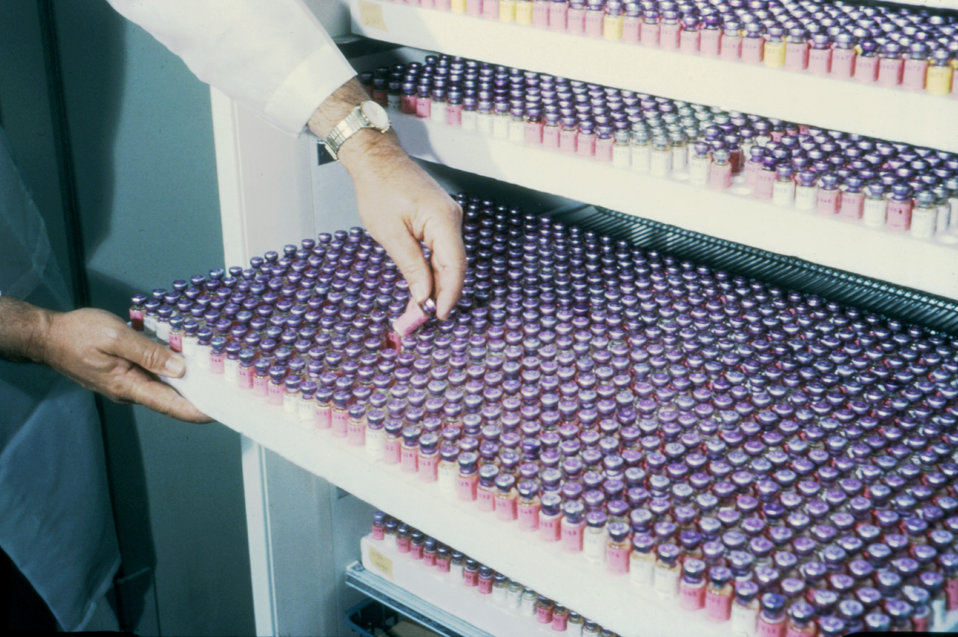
This laboratorian is shown removing blood serum aliquots from production stock inventory.